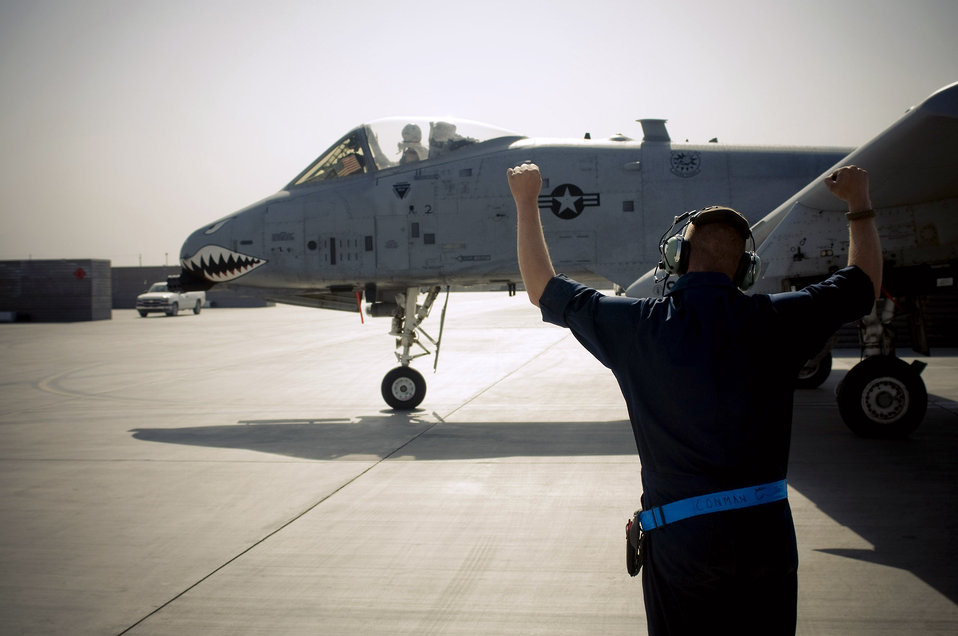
Ready to go

Senior Airman Benjamin Connery cheers on the pilot of his A-10 Thunderbolt II Oct. 18 at Bagram Airfield, Afghanistan. Airman Connery is a 455th Expeditionary Aircraft Maintenance Squadron A-10 crew chief and deployed from Moody Air Force Base, Ga. He is from Cashmere, Wash.